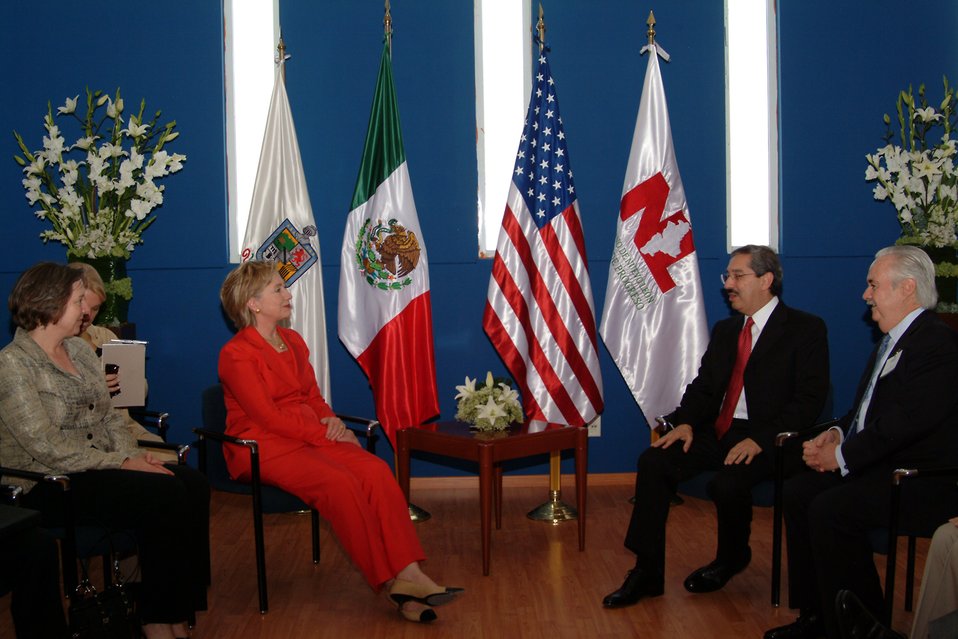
Secretary Clinton at TecMilenio University

U.S. Secretary of State Hillary Rodham Clinton at Secretary Clinton at TecMilenio University in Monterrey, Mexico March 26, 2009.